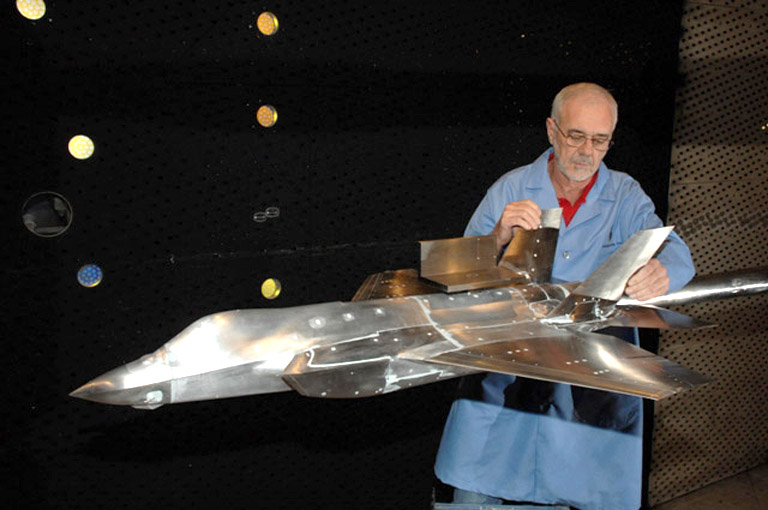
F-35 production inches closer after wind tunnel test

Carey Wofford checks the movement of the vertical stabilizers of an F-35 Lightning II joint strike fighter test model at Arnold Engineering Development Center, Arnold Air Force Base, Tenn., during a model change prior to resuming an aerodynamics test. Mr. Wofford is an Aerospace Testing Alliance outside machinist.